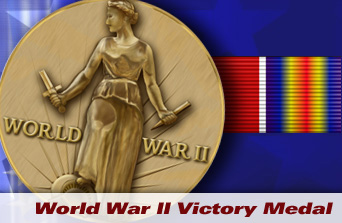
World War II Victory Medal. This medal is awarded to any servicemember for any service between Dec. 7, 1941 and Dec. 31, 1946.